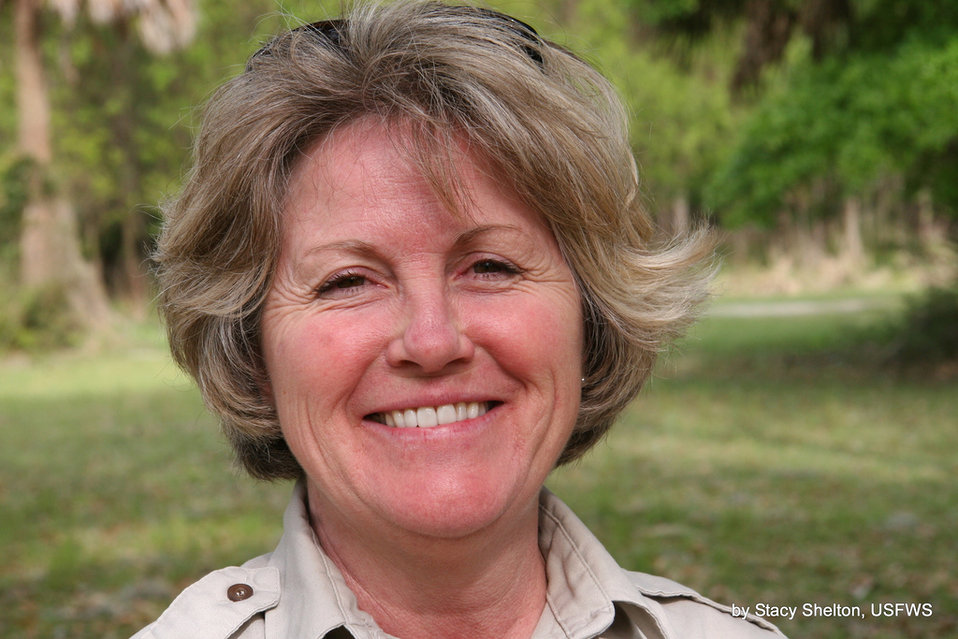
raye nilius, Project Leader south carolina low country complex, by stacy shelton